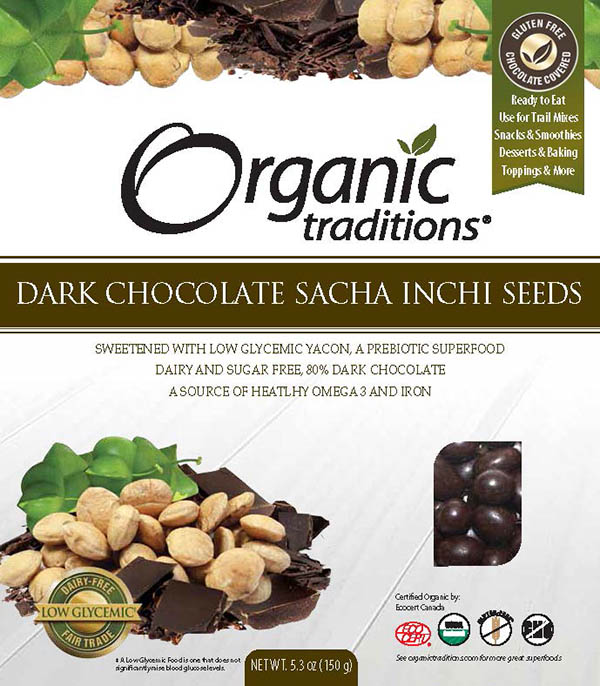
RECALLED – Candy

April 14, 2014 – Product Recall – Health Matters America Inc. Issues Allergy Alert on Undeclared Milk in Organic Traditions Brand Dark Chocolate Golden Berries and Dark Chocolate Sacha Inchi Seeds.